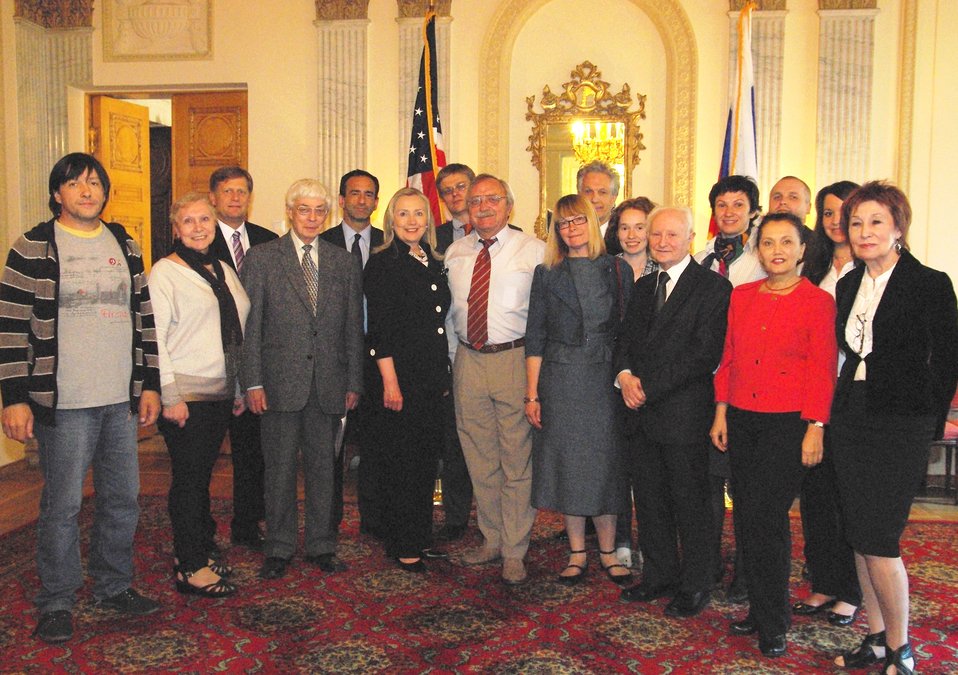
Secretary Clinton With Civil Society Leaders

U.S. Secretary of State Hillary Rodham Clinton Secretary Clinton poses for a photo with St. Petersburg civil society leaders at the Consul General’s Residence in St. Petersburg, Russia, on June 29, 2012.